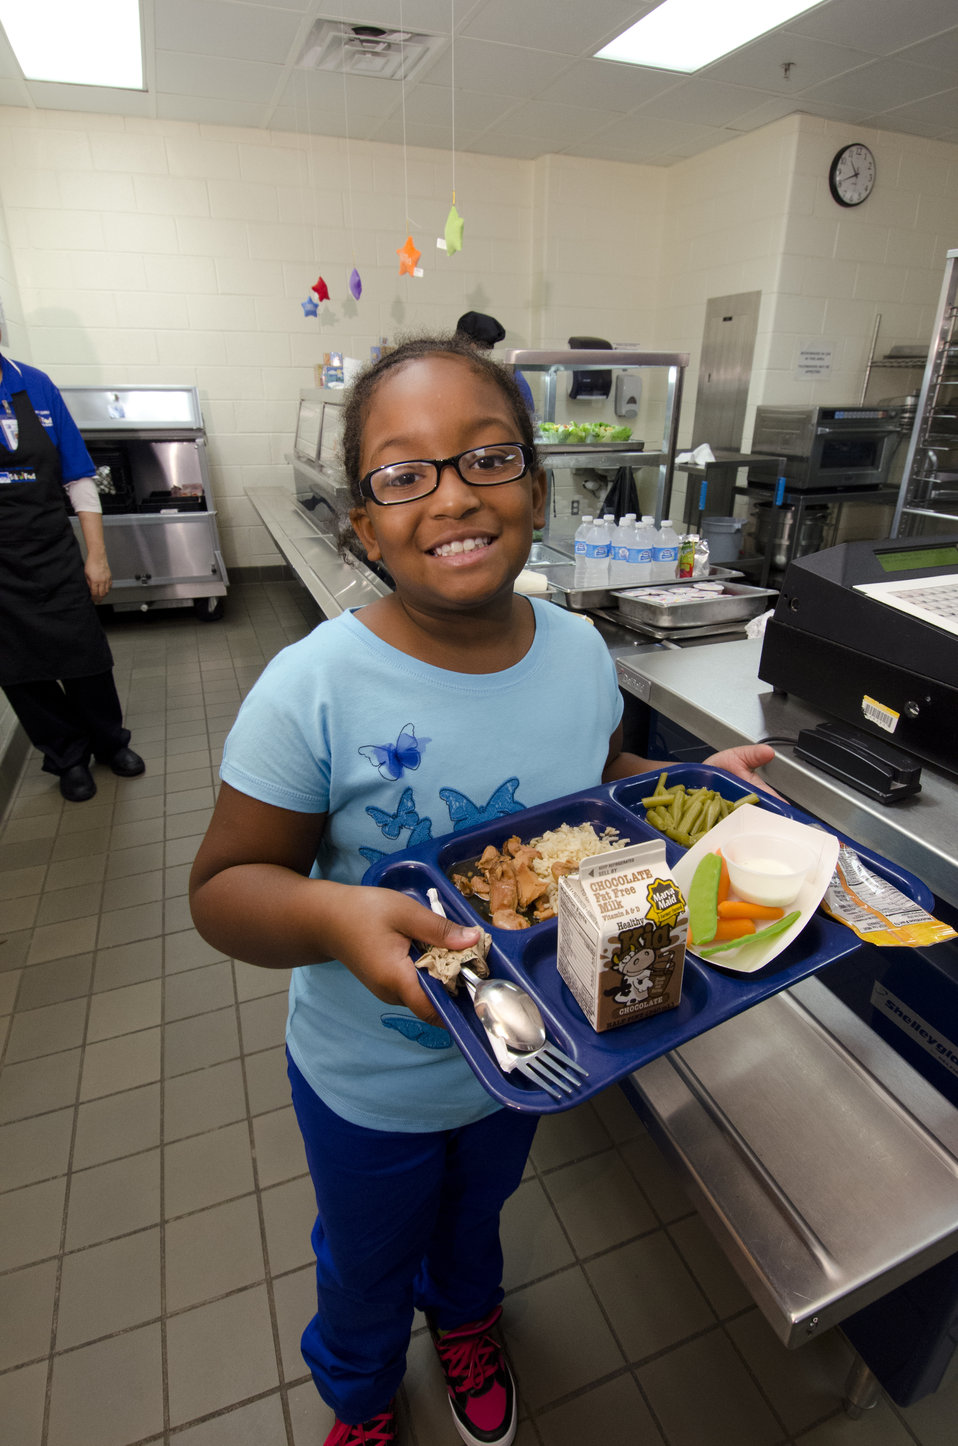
School lunch staff and students enjoy the new school lunch menu created to meet the new standards at the Yorkshire Elementary School in Manassas, VA on Friday, Sept. 7, 2012.